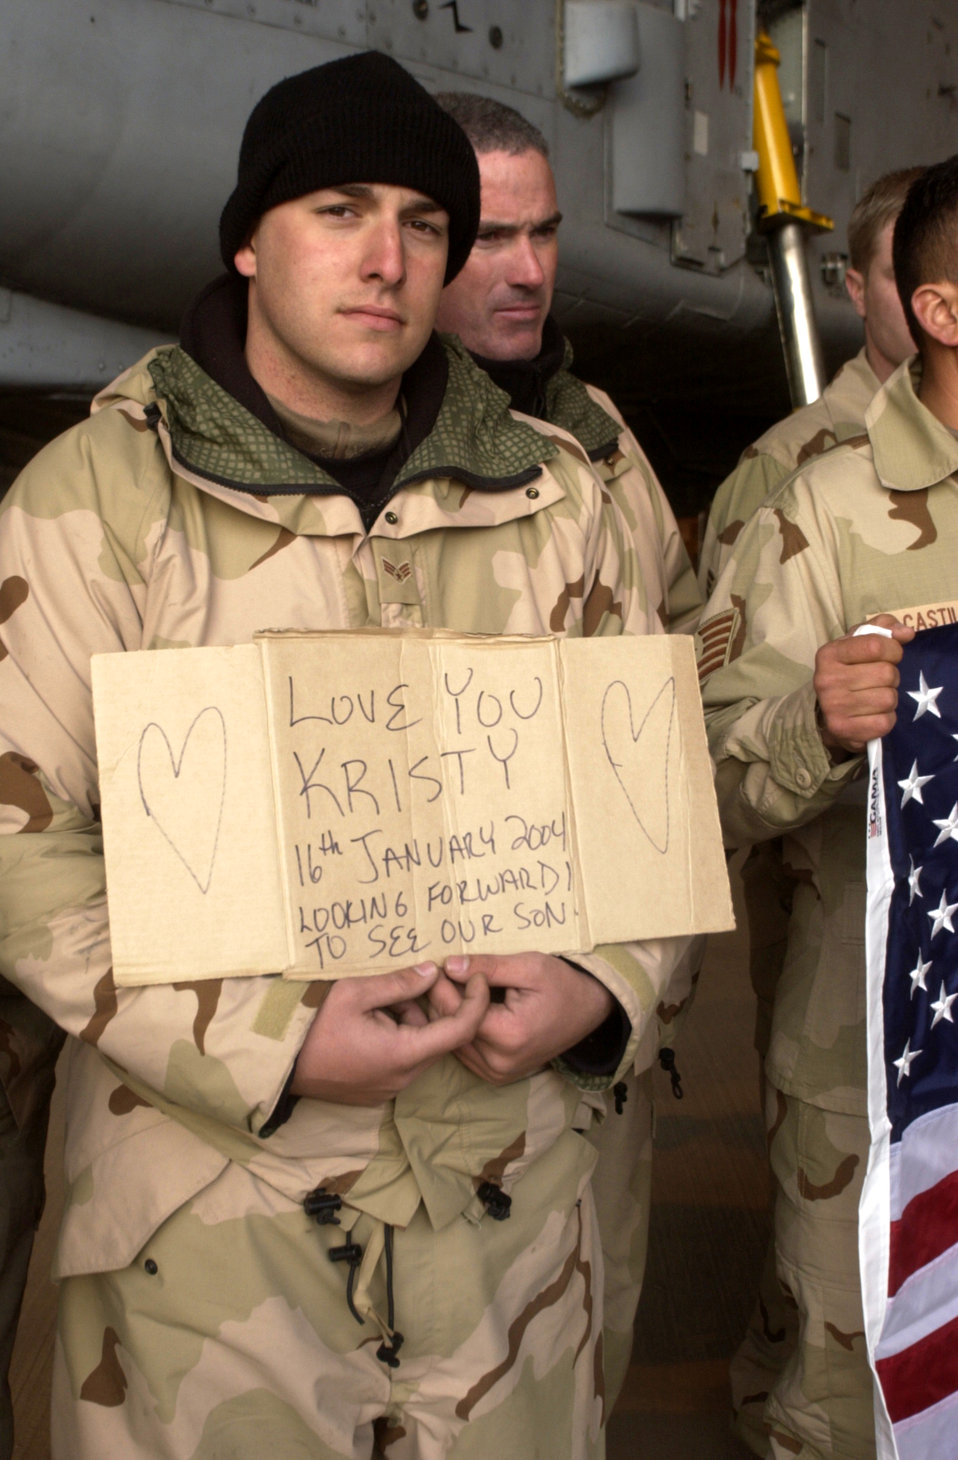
Message home

BAGRAM AIR BASE, Afghanistan -- Senior Airman Patrick Blevins sends a message to his wife, Kristy, and his unborn son during a national television news broadcast Nov. 30. The baby is expected to be born Jan. 16. Blevins is deployed here from Davis-Monthan Air Force Base, Ariz., supporting Operation Enduring Freedom. He is assigned to the 354th Expeditionary Fighter Squadron's ammo flight.